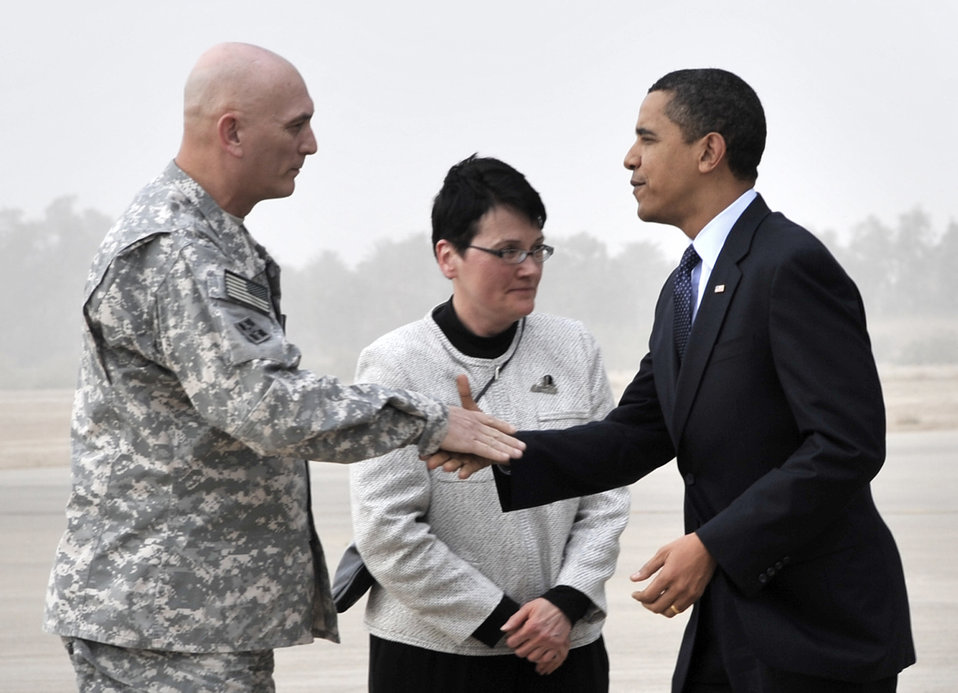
President Obama visits Sather

Army Gen. Ray Odierno and U.S. Ambassador Patricia Butenis greet President Barack Obama on the flightline April 7 at Sather Air Base, Iraq. Shortly after arriving, the president addressed a crowd of nearly 1,500 servicemembers, government civilians and contractors at Al Faw Palace at Camp Victory, Iraq. During his speech, the president commended servicemembers for their focus and dedication and promised them his support. The visit marked the president's first trip to Iraq since taking office. General Odierno is the Multinational Forces-Iraq commanding general.